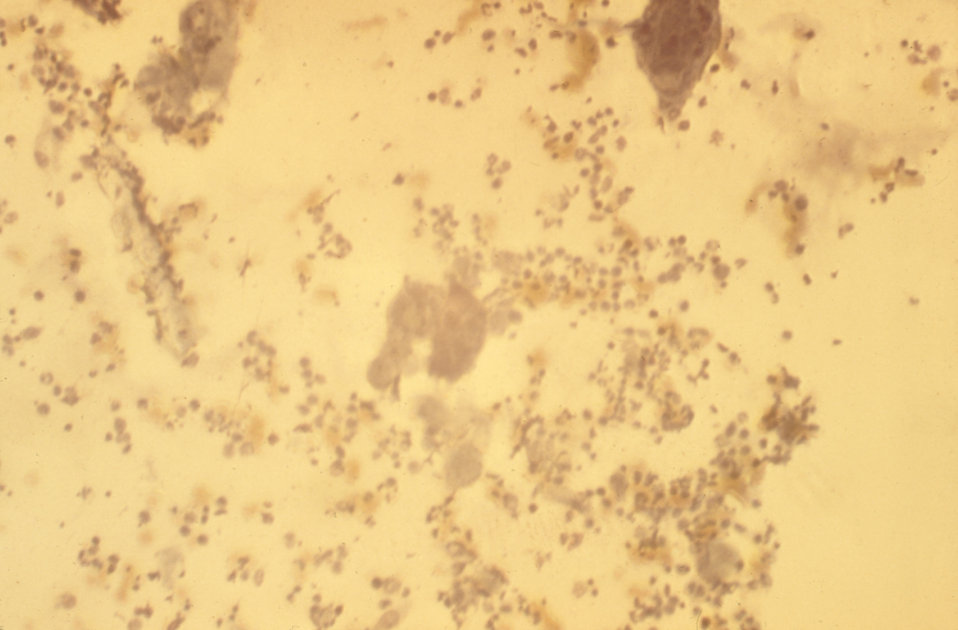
This specimen was taken from a penile lesion on a patient with herpes progenitalis using the Tzanck test; Mag.: low power.